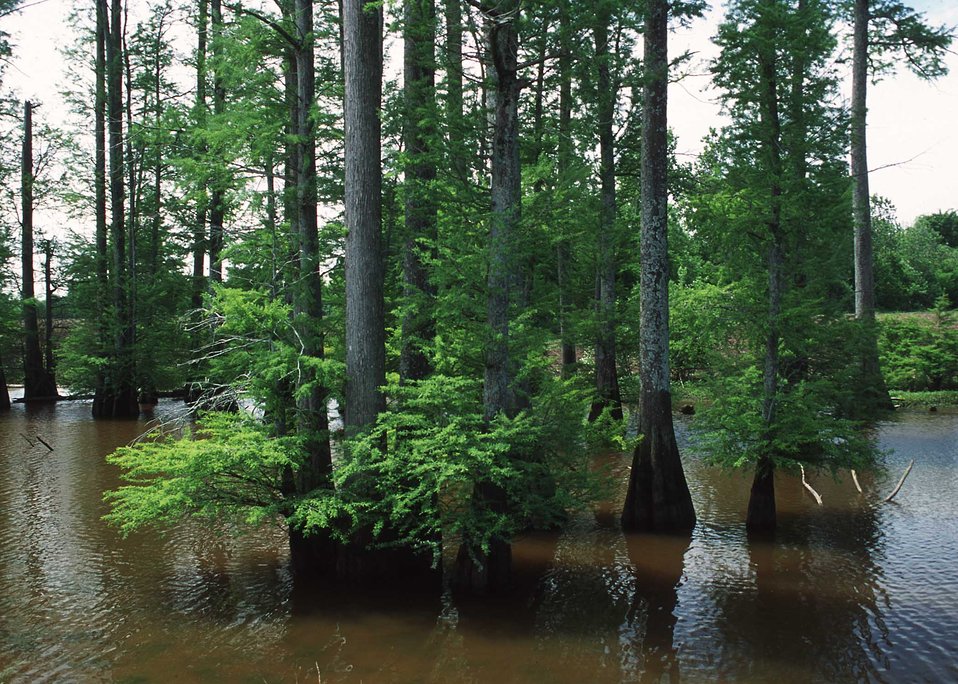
Remnant of a cypress/tupelo wetland in an oxbow in central Mississippi. The land is entered into the Wetlands Reserve Program.